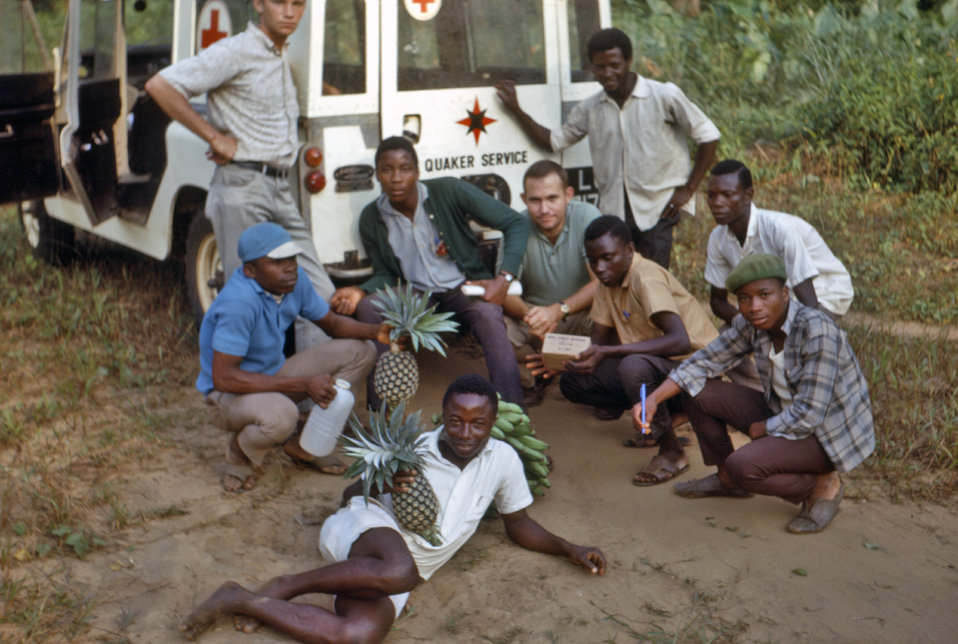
This 1968 photograph, which was taken during CDC's refugee relief effort at the time of the Nigerian-Biafran civil war, showed EIS officer Dr. Godfrey Oakley (center, green shirt) seated among members of the American Friends Service Committee (AFSC).